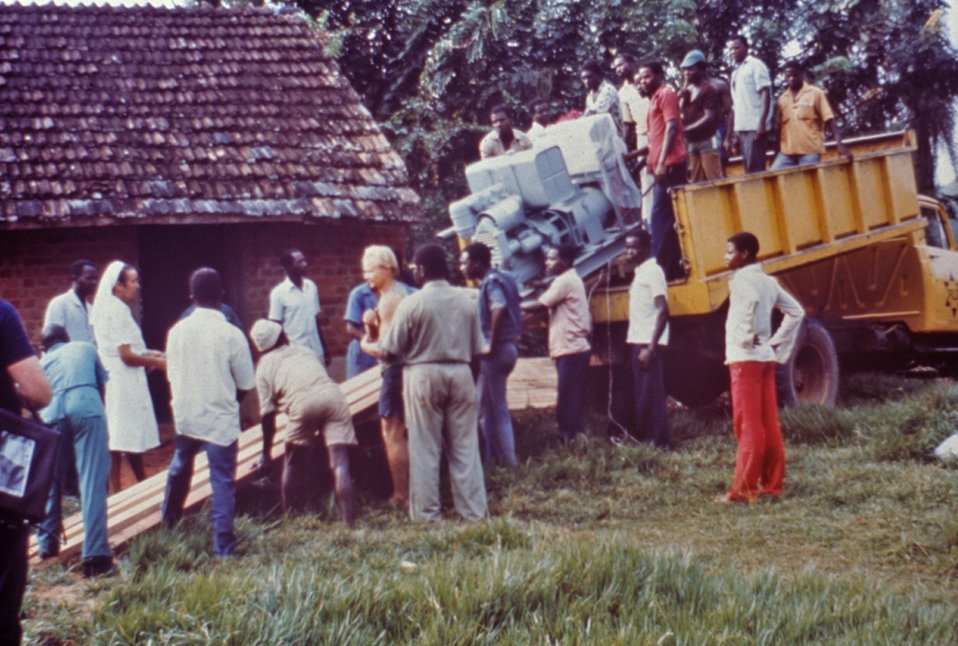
This 1976 photograph showed the local people as they assisted in the offloading of a generator, which was used to help power the mission station that was set up during the Ebola outbreak in Yambuku, Zaire.